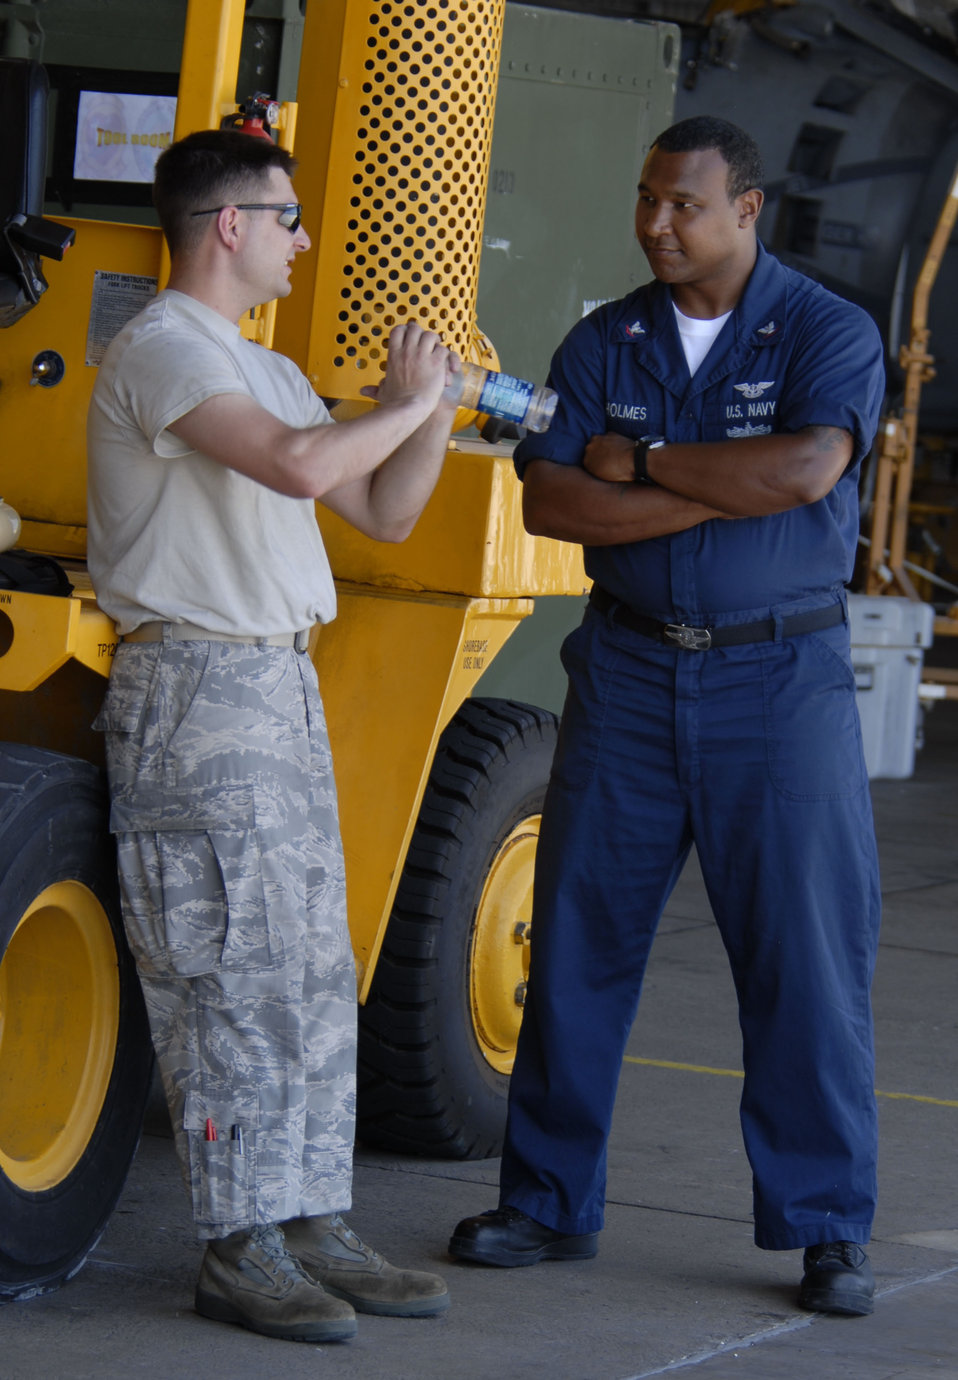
Air Guard, Navy train together

Staff Sgt. David Bizefski, an F-16 Fighting Falcon crew chief from the Wisconsin Air National Guard's 115th Fighter Wing in Madison, and Petty Officer 3rd Class Sammy Holmes, an aviation administration specialist from Strike Fighter Squadron 2, Naval Air Station Lemoore, Calif., share experiences during a two-week air-to-air combat skills training exercise at NAS Key West, Fla.